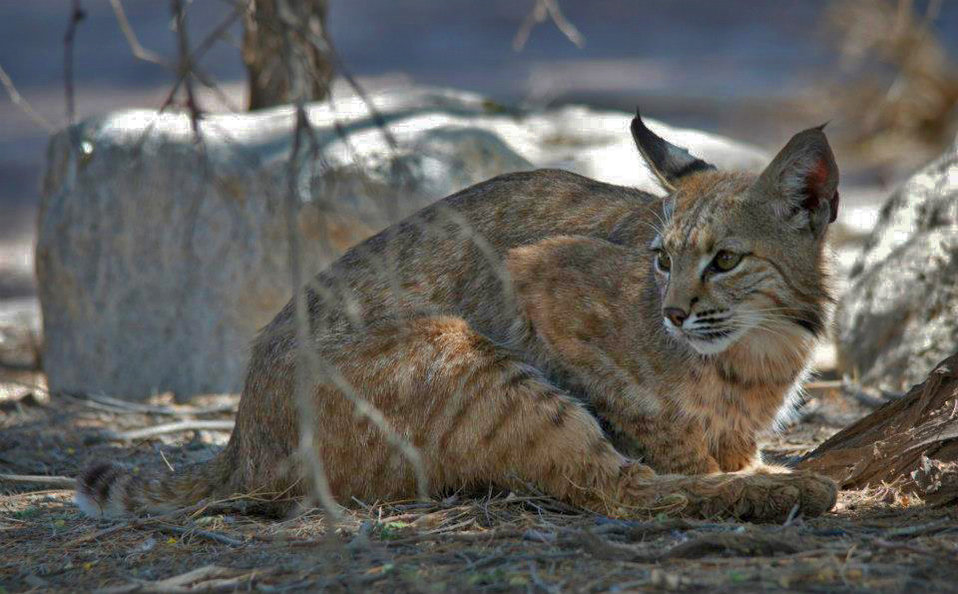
Bobcat at Sonny Bono NWR-4

These photos are taken in the evening very close to the Sonny Bono National Wildlife Refuge visitor center. (Photo by Mark Stewart/USFWS)

From the photographer: 'We have a lot of cover, a small pond and lots of rabbits. We have at least one family of Bobcats and I am expecting to see their kittens soon. They are used to people, but I use a 500 mm lens so as not to interfere with their normal activities.' -- Mark Stewart